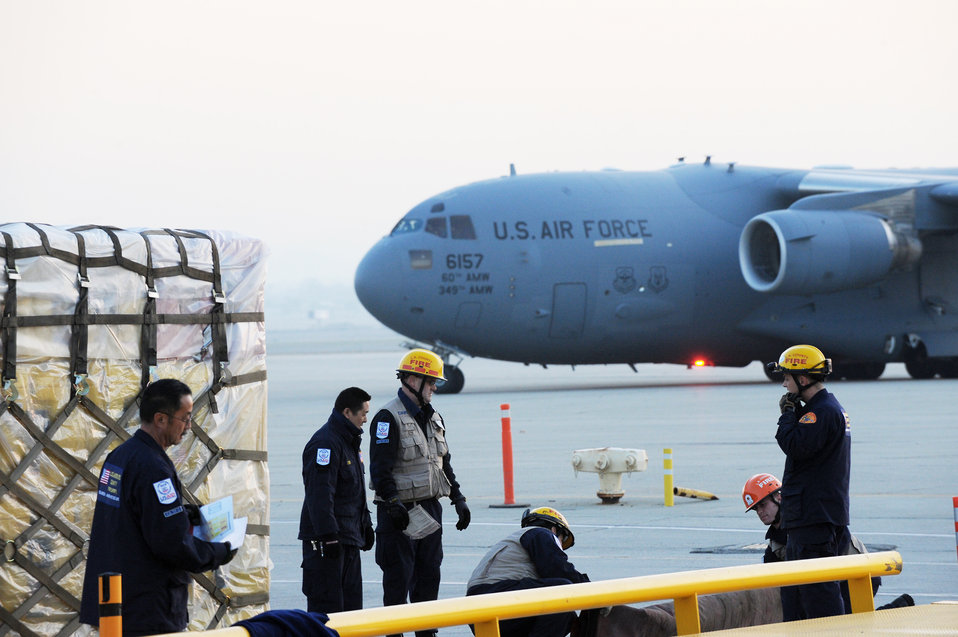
Airmen load C-17s for Haitian relief

Relief workers and search and rescue teams use March Air Reserve Base, Calif., as a staging area to assemble supplies, people and equipment Jan. 13, 2010, following the recent 7.0-magnitude earthquake in Haiti. All will be loaded on a C-17 Globemaster III and flown into Port-au-Prince, Haiti. The aircraft is assigned to the 60th Air Wing at Travis Air Force Base, Calif.,